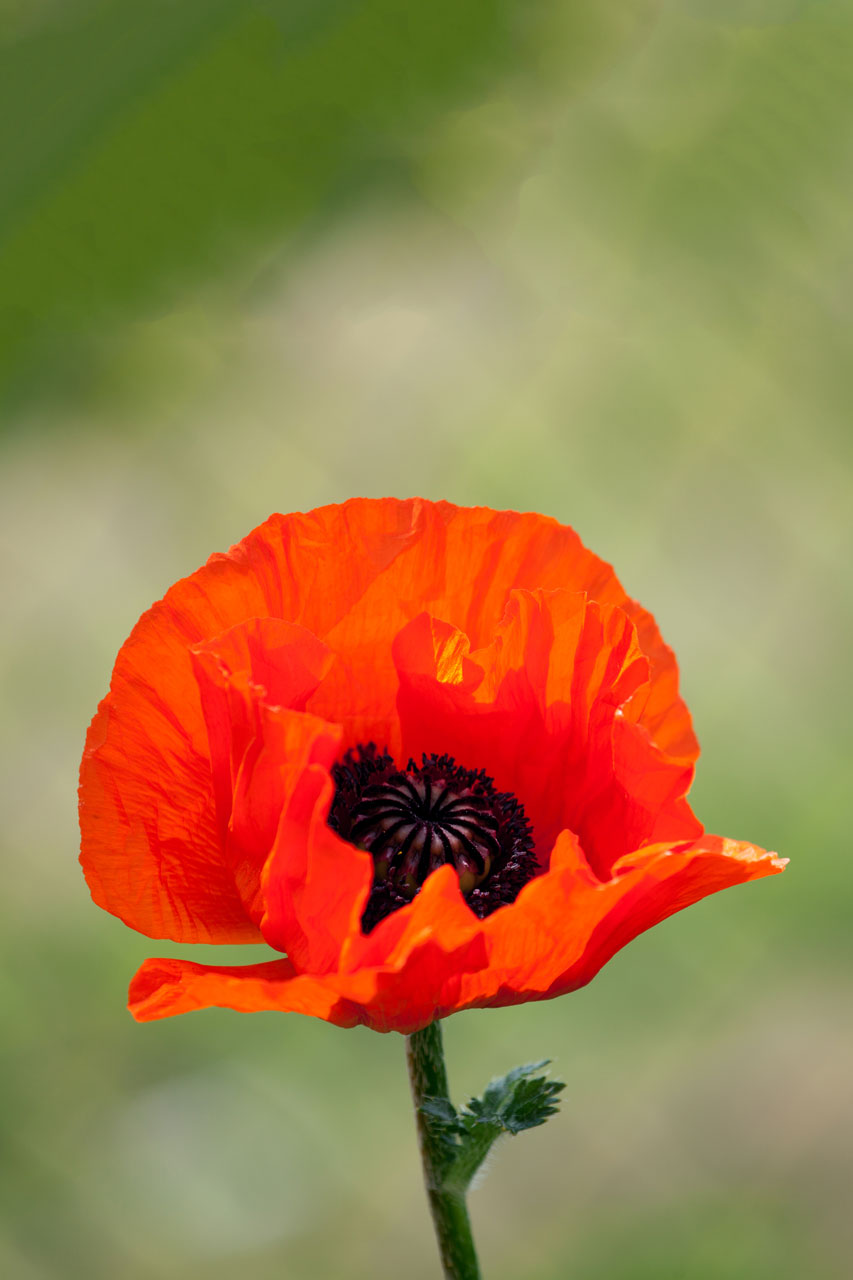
Red poppy flower on green background with copy space.